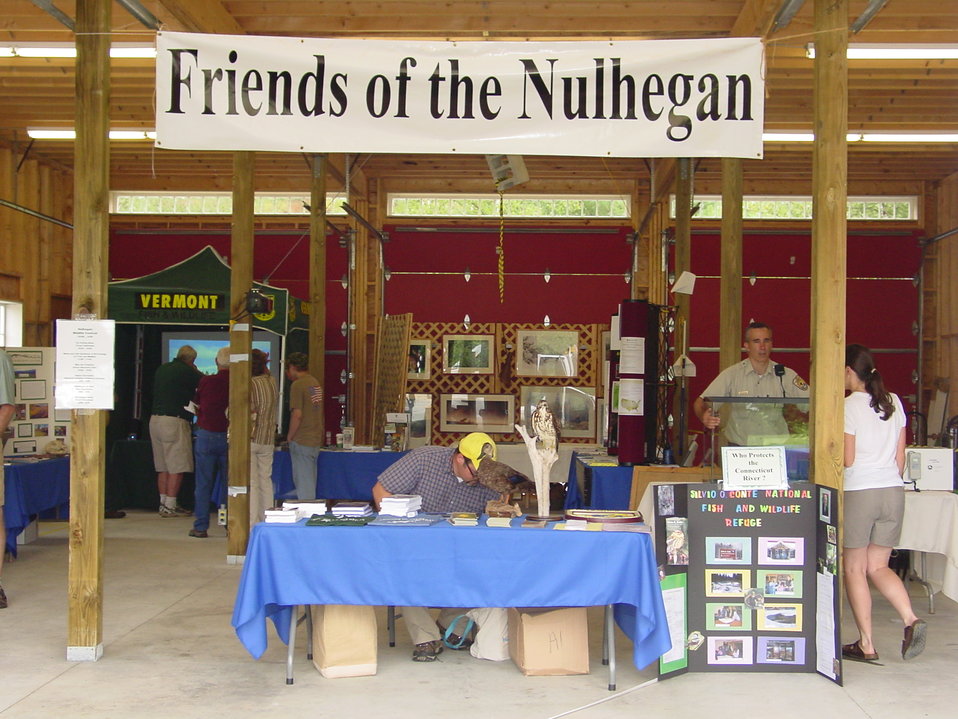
Nulhegan Wildlife Festival

Nulhegan Basin Division, Silvio O. Conte National Wildlife Refuge.